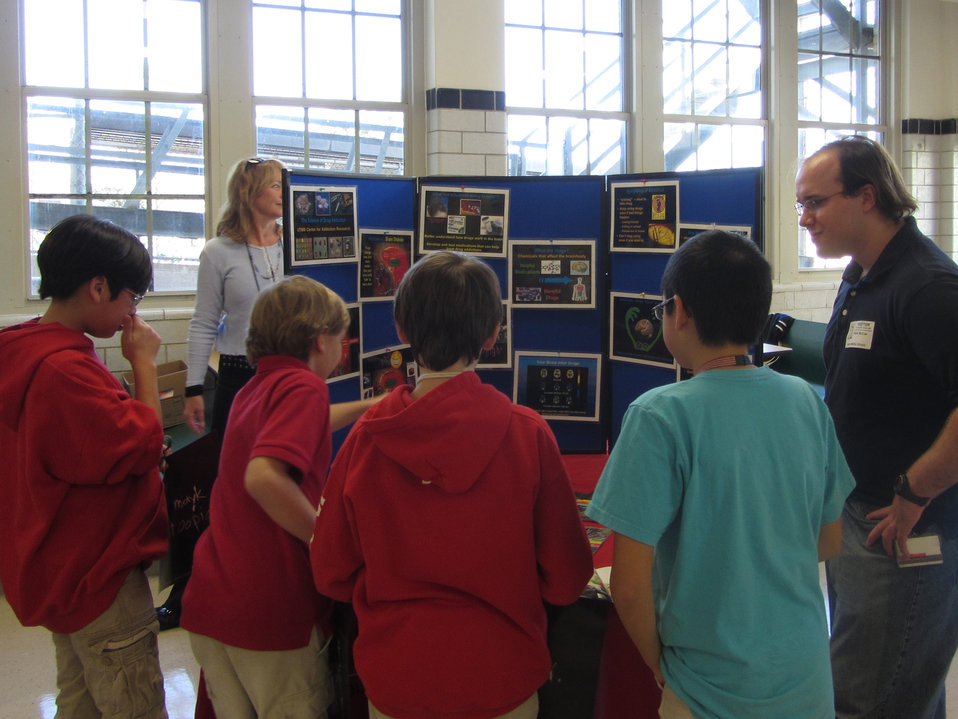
Ask the Expert, NDFW 2013

Galveston City, Tex. Informational fair for Austin Middle School students.